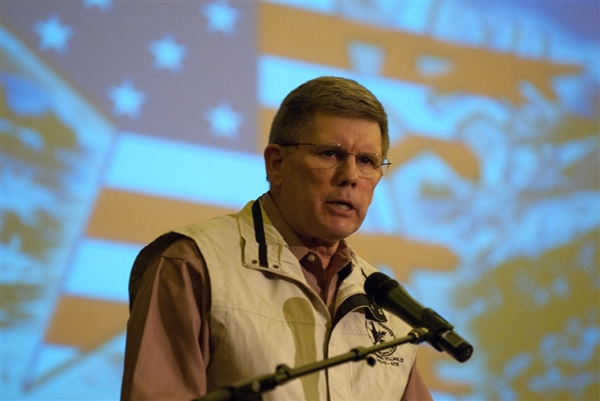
Organization reaches out to wounded warriors

Wallace E. “Wally” Tyson, the national commander of the Disabled American Veterans, addresses participants in March 2011 during the National Disabled Veterans Winter Sports Clinic in Snowmass Village, Colo.